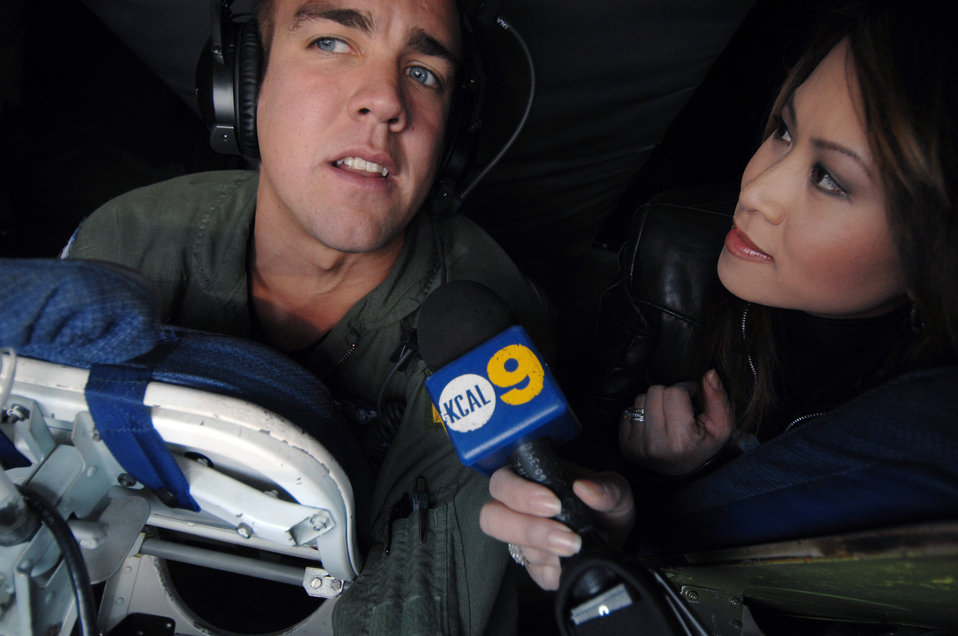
Media, celebrities receive bird's eye view of AF mission

Leyna Nguyen, a news anchor and reporter for Los Angeles television stations KCAL and KCBS, interviews Senior Airman Terry Mossbarger during a flight aboard a KC-135 Stratotanker Nov. 12 from March Air Reserve Base, Calif., The media flight was part of Air Force Week-Los Angeles. Airman Mossbarger is a boom operator from the 336th Air Refueling Squadron.